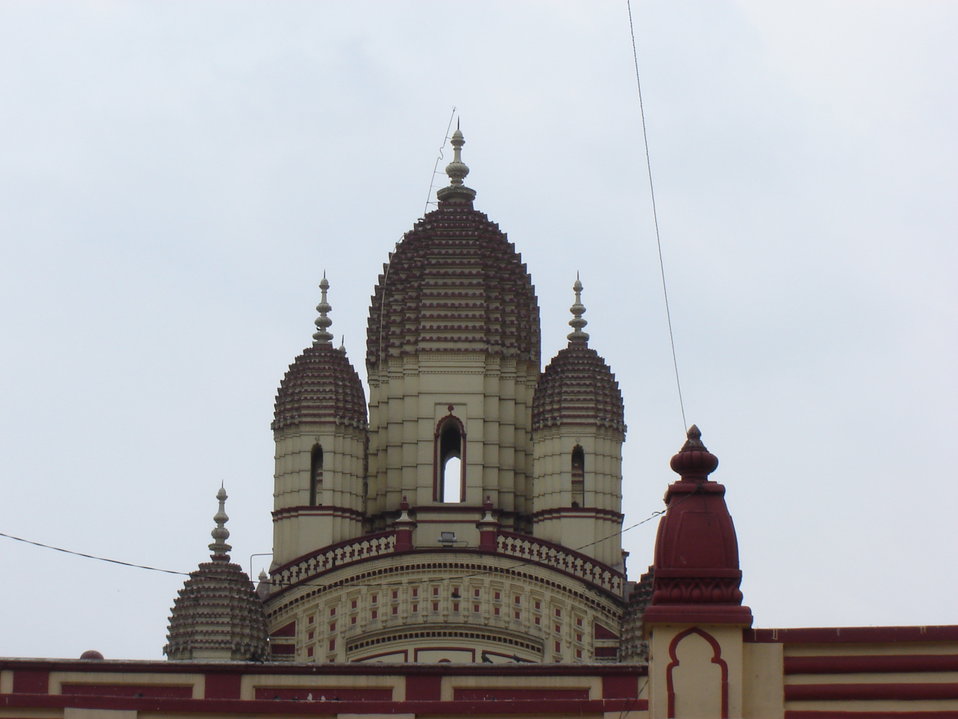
the spires of Dakshinswar